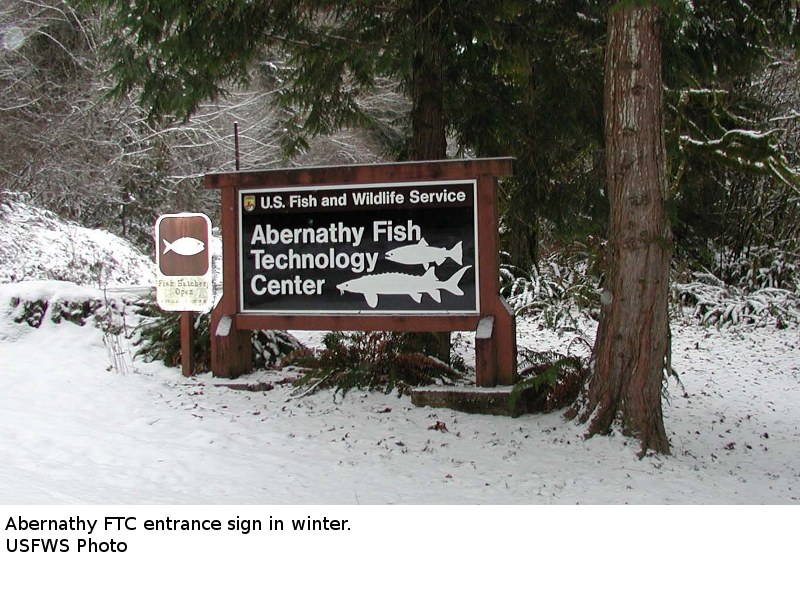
Entrance sign in snow at Abernathy Fish Technology Center